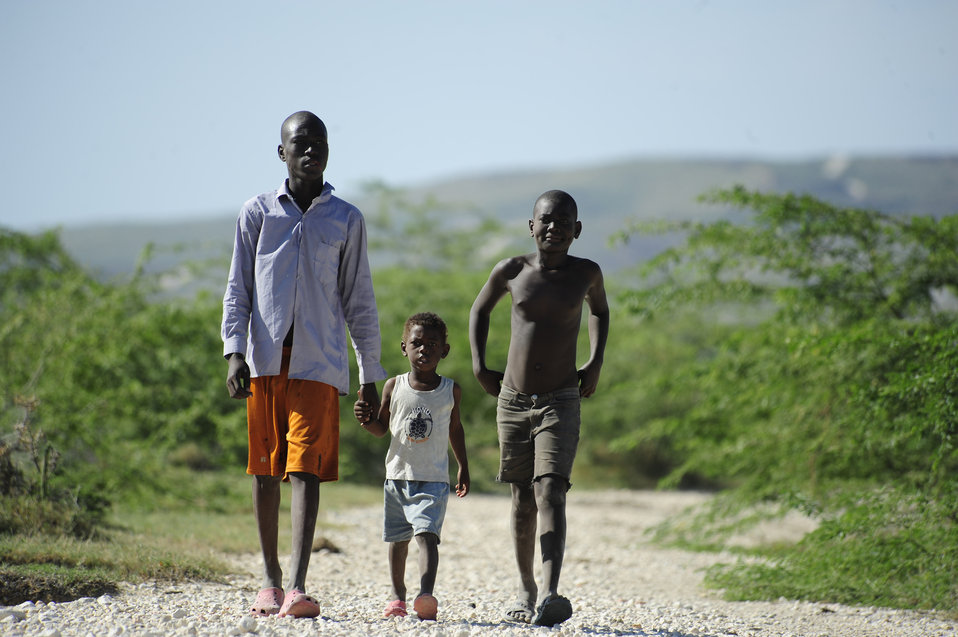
Haiti Earthquake Relief

Haitians walk down a rural road Jan 18, 2010 in Port-au-Prince, Haiti. Department of Defense assets have been deployed to assist in the Haiti relief effort following a magnitude 7 earthquake that hit the city on Jan. 12, 2010.